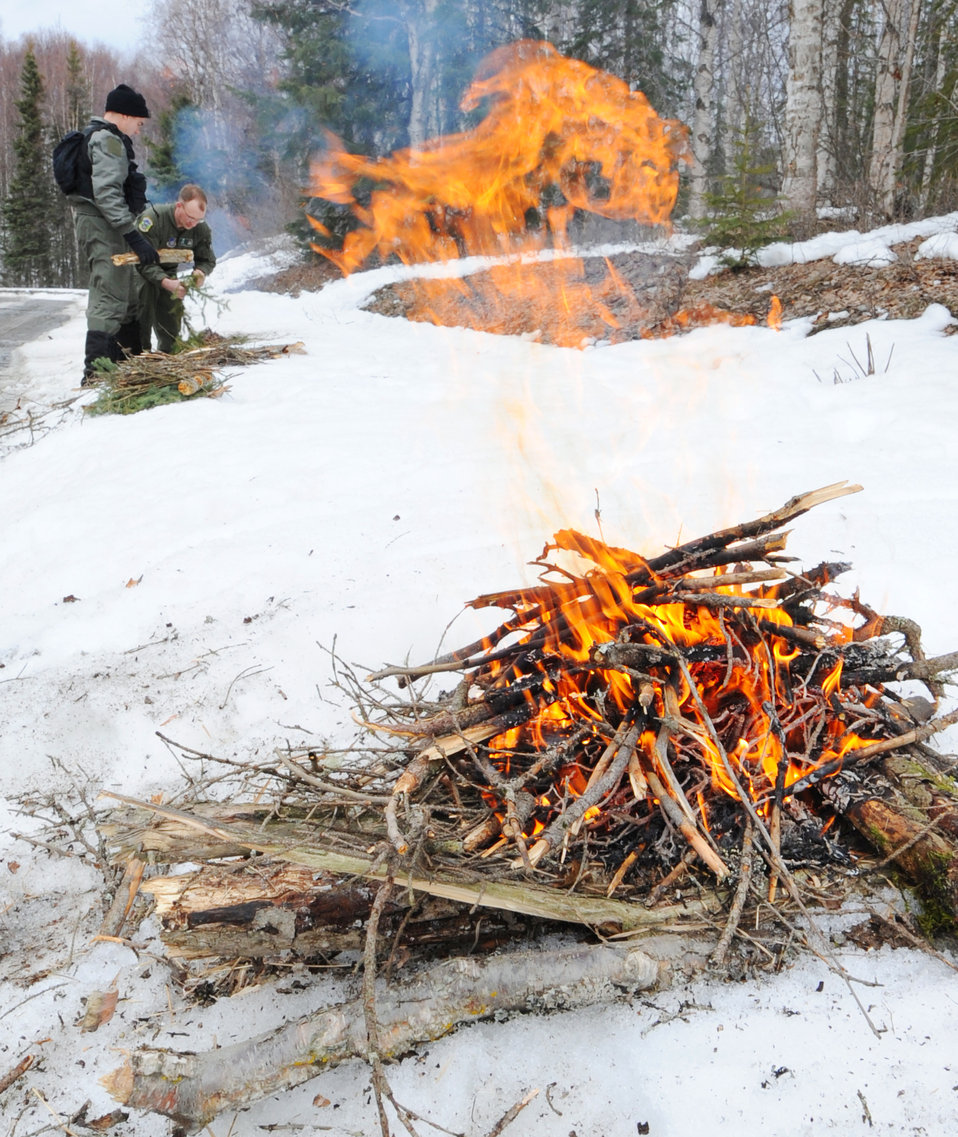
Airmen train for cold weather survival

Staff Sgt. Reid Beveridge (left) assists Lt. Col. Mike Erickson in starting a fire during survival, evasion, resistance and escape refresher training April 12, 2010, at Elmendorf Air Force Base, Alaska. Colonel Erickson is a mission crew commander with the 962nd Airborne Air Control Squadron and Sergeant Beveridge is a SERE specialist with the 3rd Operation Support Squadron.